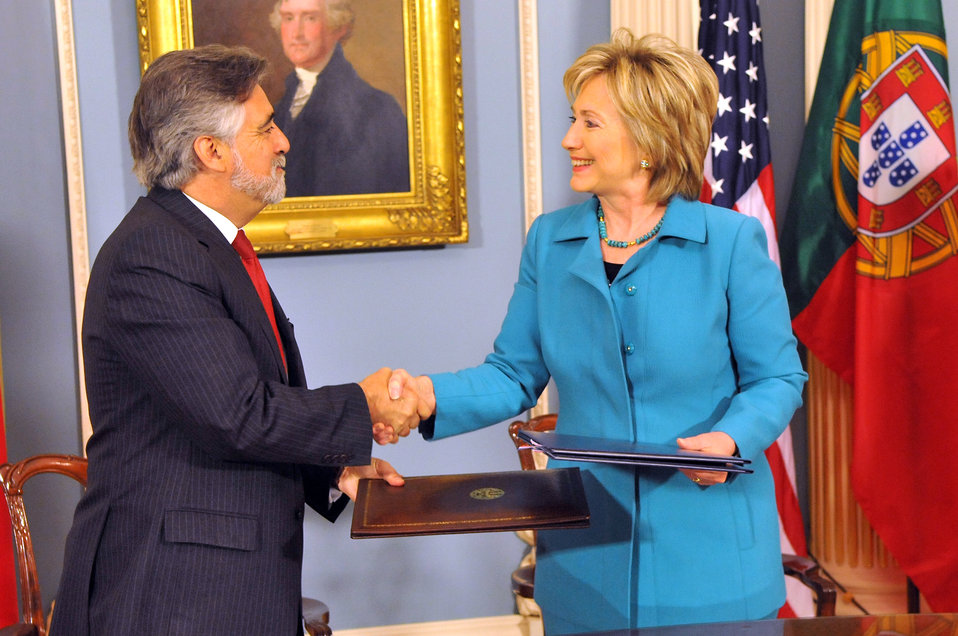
Secretary Clinton With Portuguese Foreign Minister

U.S. Secretary of State Hillary Rodham Clinton meets with Portuguese Foreign Minister Luis Amado at the U.S. Department of State in Washington, DC June 5, 2009.